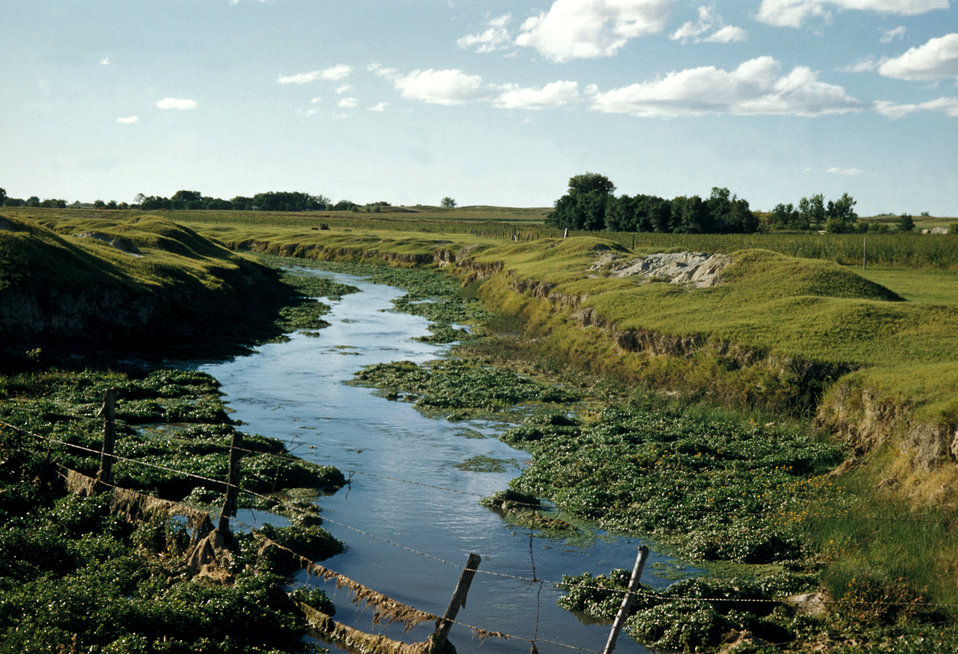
Some mosquitoes enjoy irrigated regions, along with slow-moving streams.